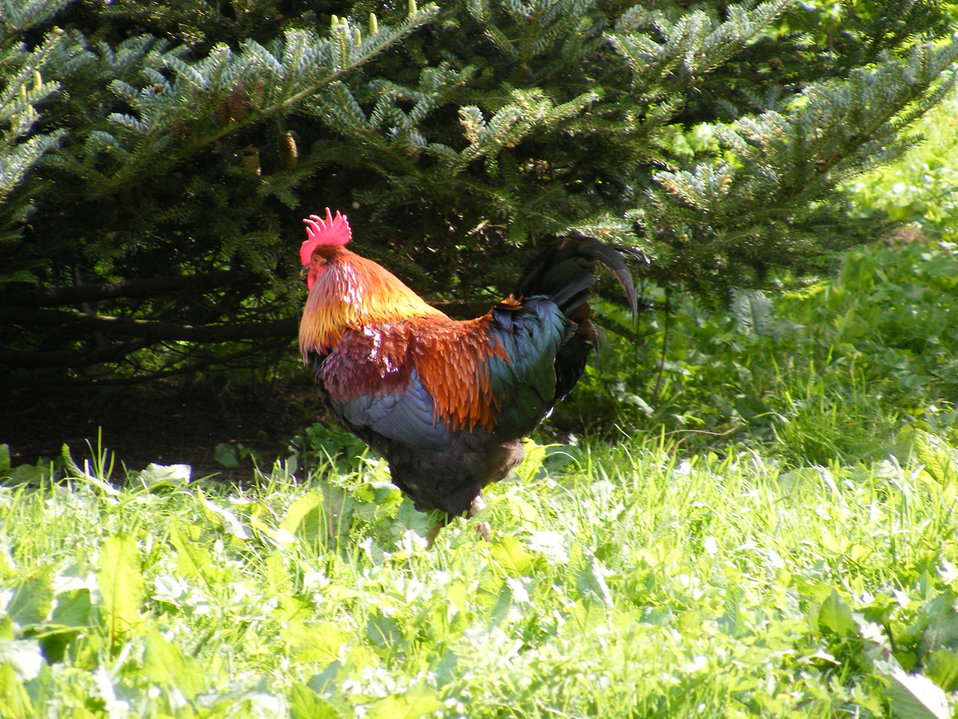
Roving rooster

Rooster on the move.